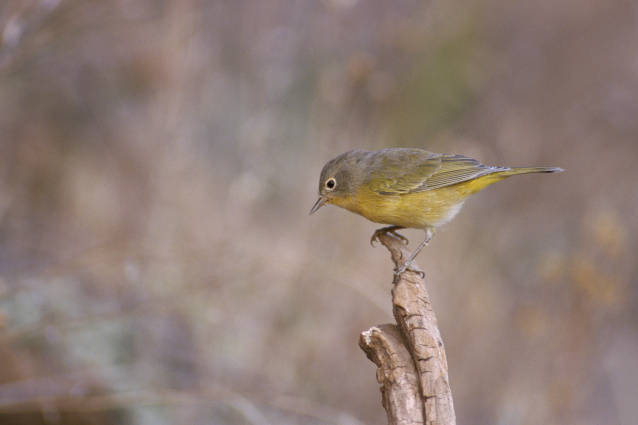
Nashville warbler